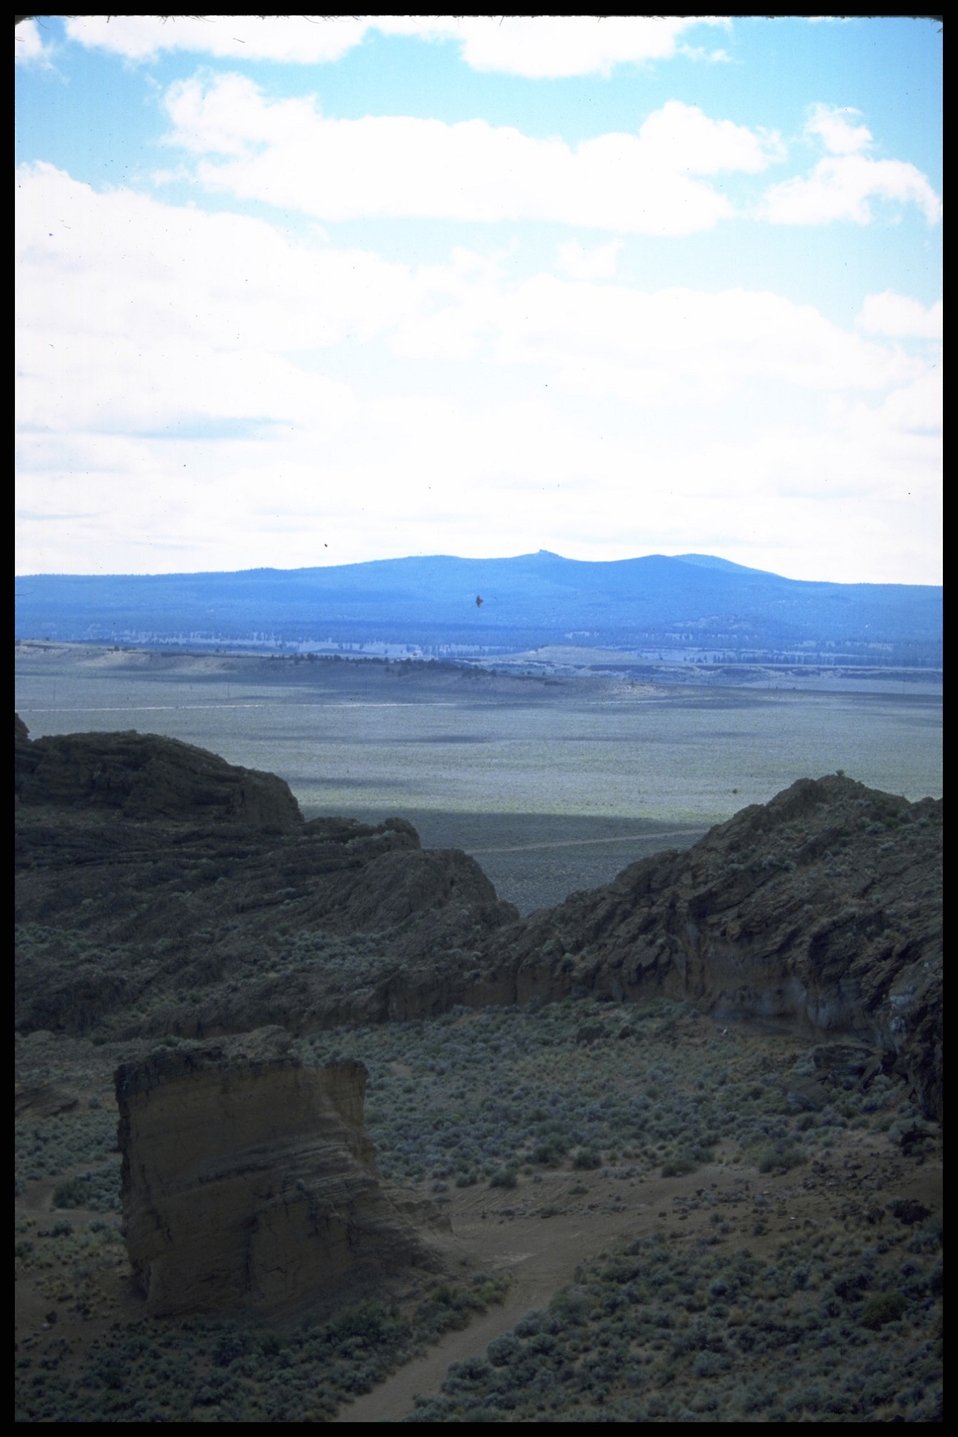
Ft. Rock from above, Lakeview District.